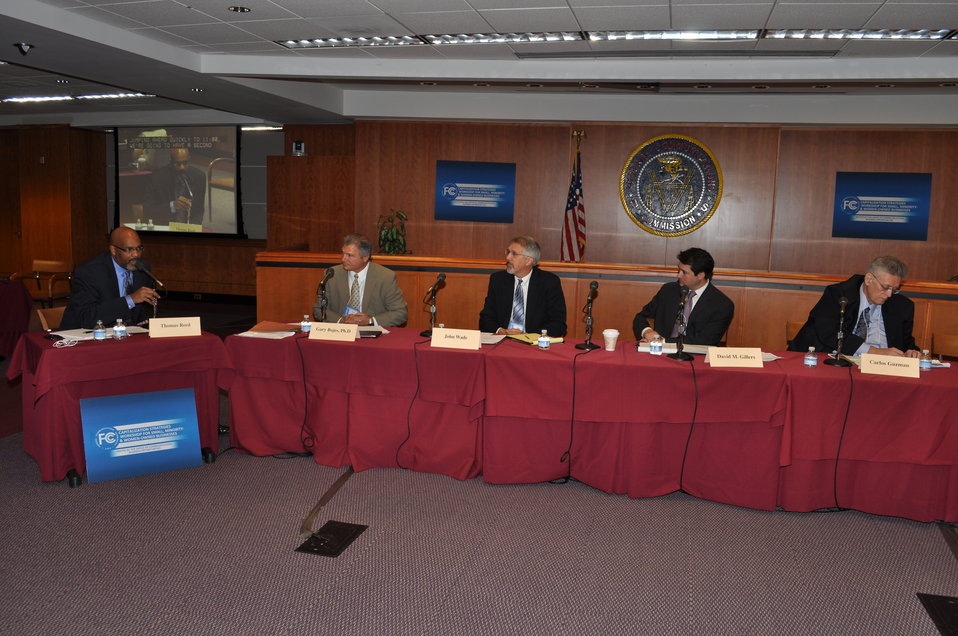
Capitalization Strategies

Workshop for small, minority and women owned businesses. Hosted by the Office of Communications Business Opportunities